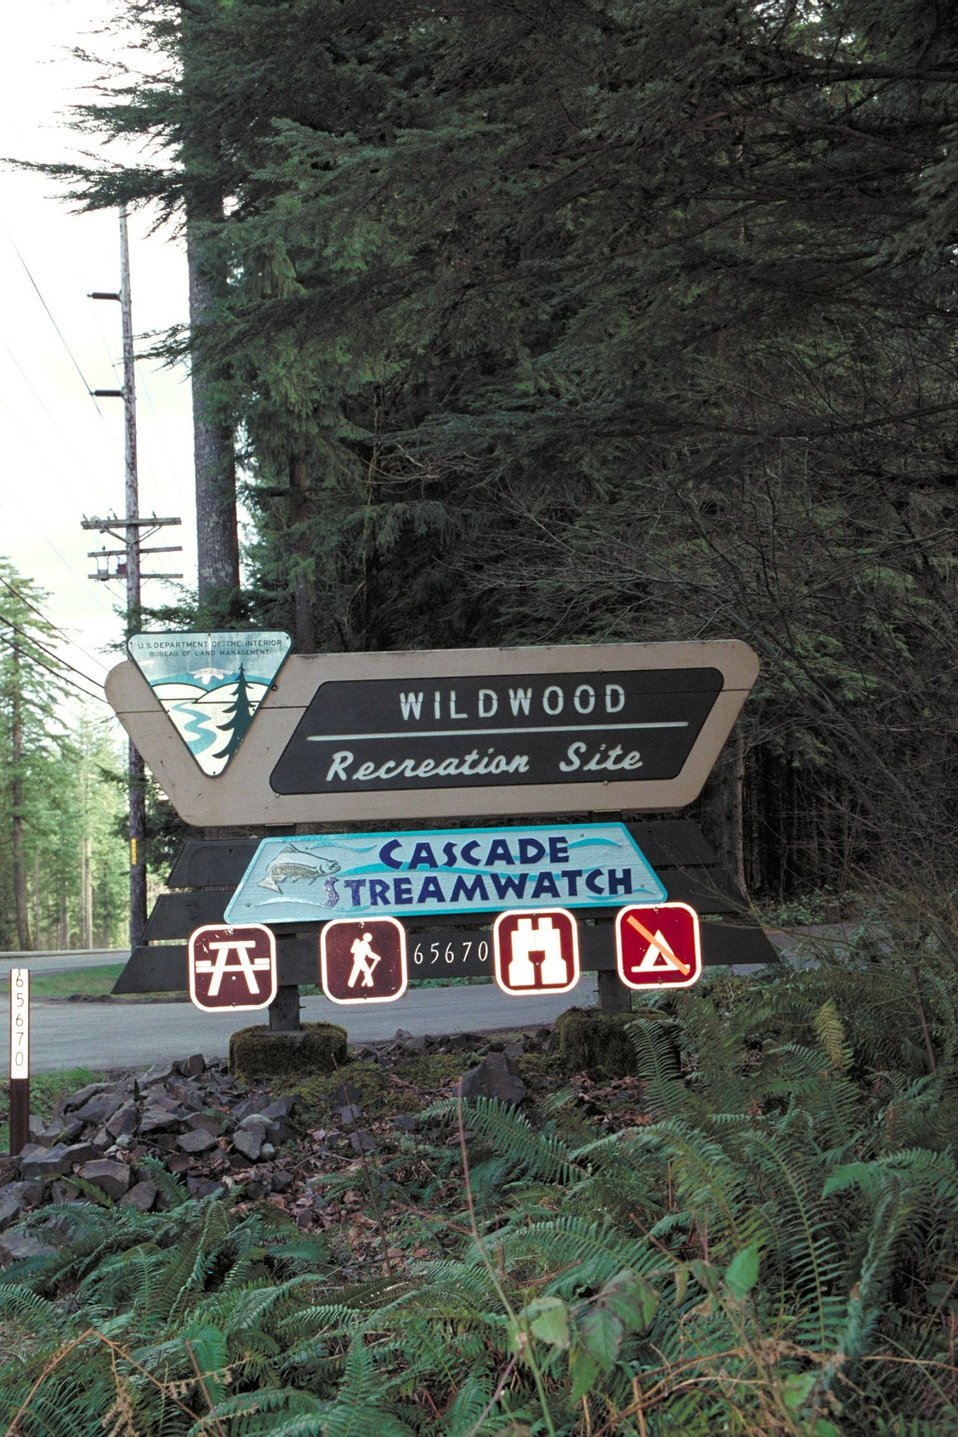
Cascade Stream Watch is an environmental education program conducted at BLM's Wildwood Recreation site.